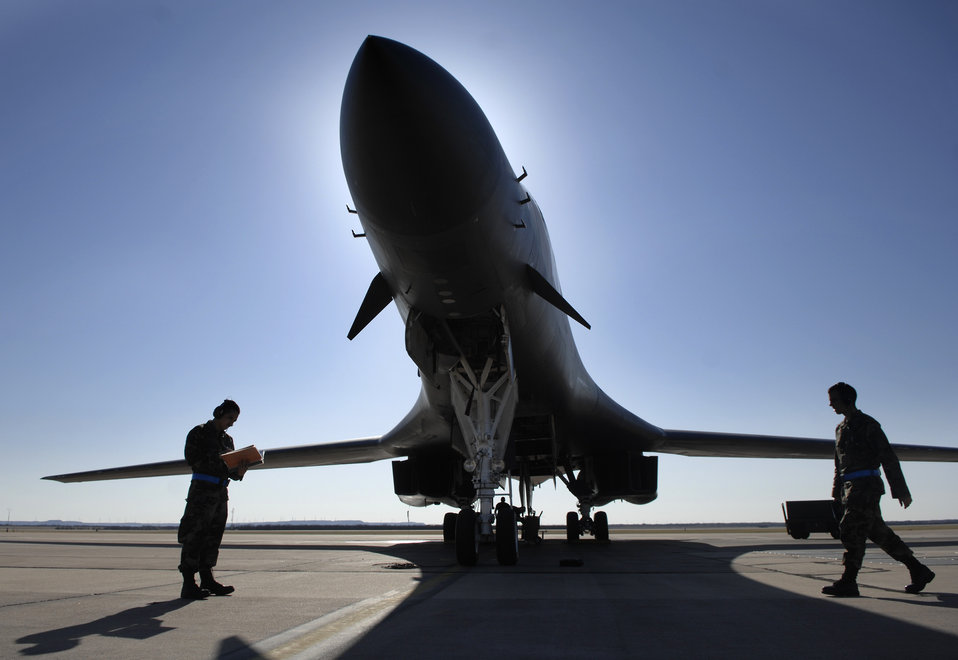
B-1B achieves first supersonic flight using synthetic fuel

Senior Airman Hector Gonzalez and Airman 1st Class Jeffery Polllitt conduct an operational check on a B-1B Lancer March 19 at Dyess Air Force Base, Texas. The B-1B was the first aircraft to fly supersonic speeds using a 50/50 blend of synthetic and petroleum fuel over the White Sands Missile Range airspace in south-central New Mexico.